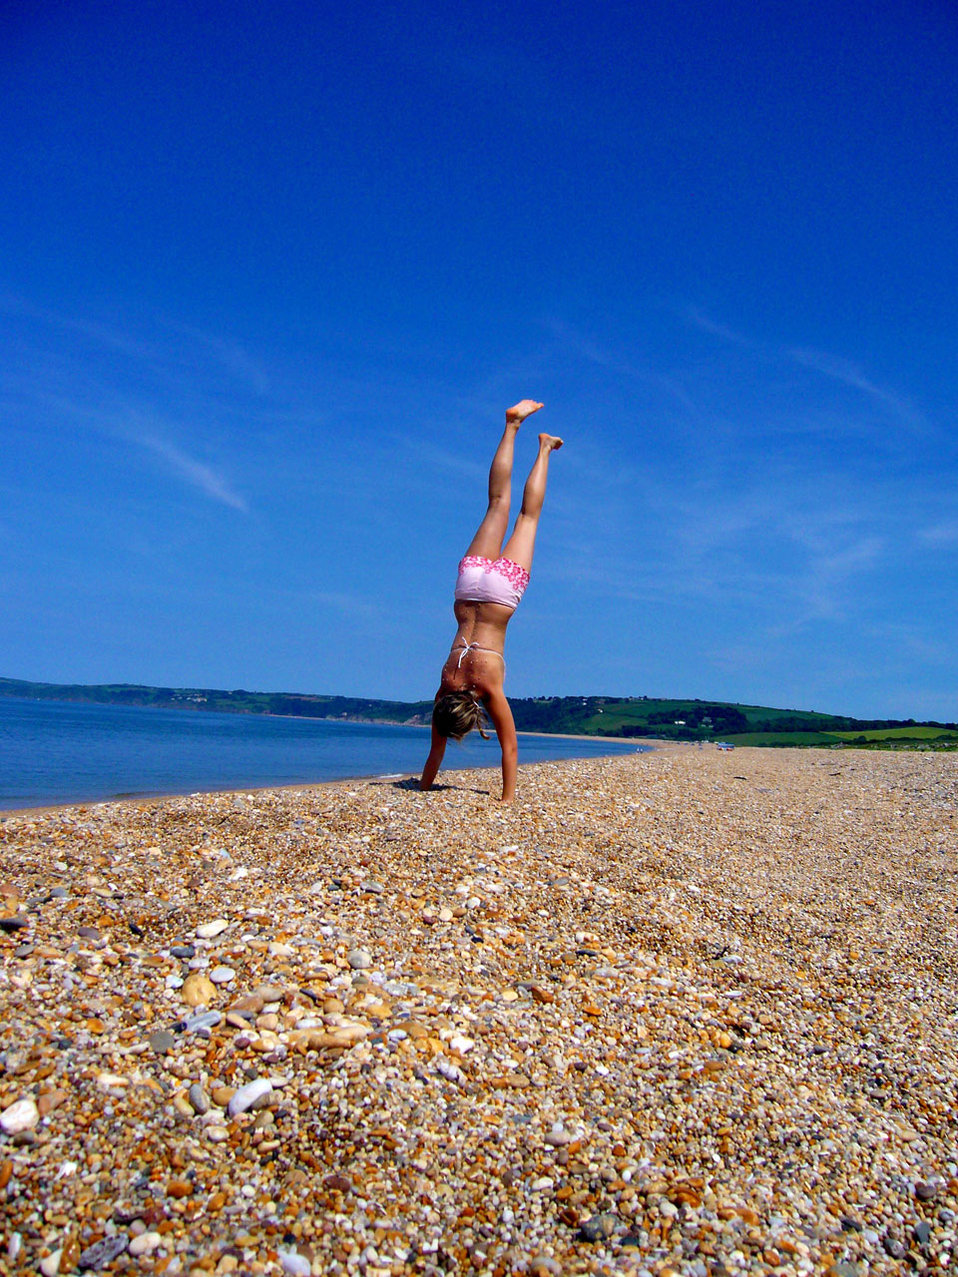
Girl on the beach.